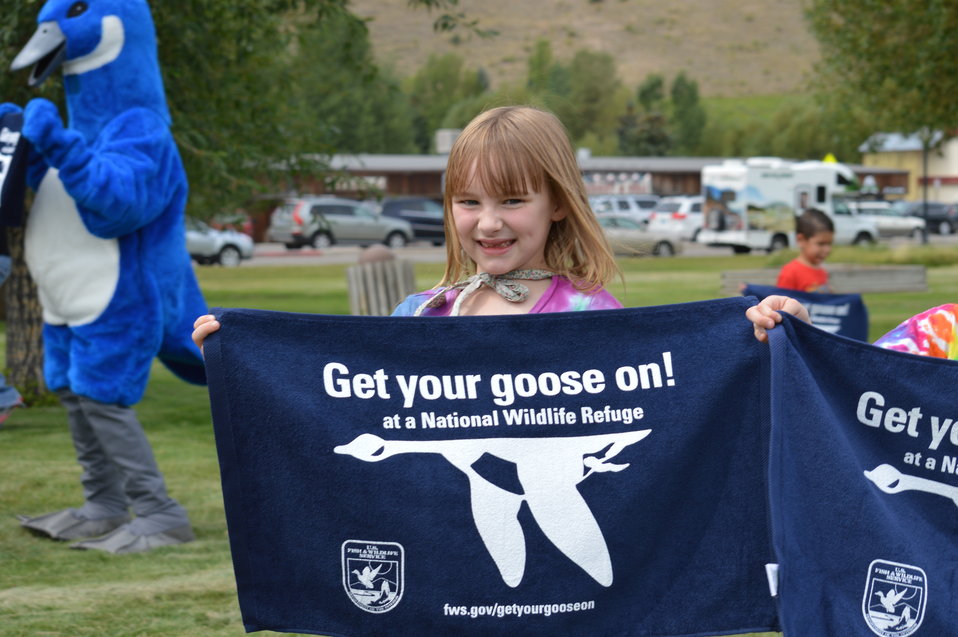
Get Your Goose On! - National Elk Refuge Style

On August 10, 2012 the U.S. Fish and Wildlife Service and Partners celebrated the 100 year anniversary of the establishment of the National Elk Refuge. In these photos, young attendees, along with Puddles the Blue Goose and the National Elk Refuge's mascot, showed us how to Get Your Goose On! with style.